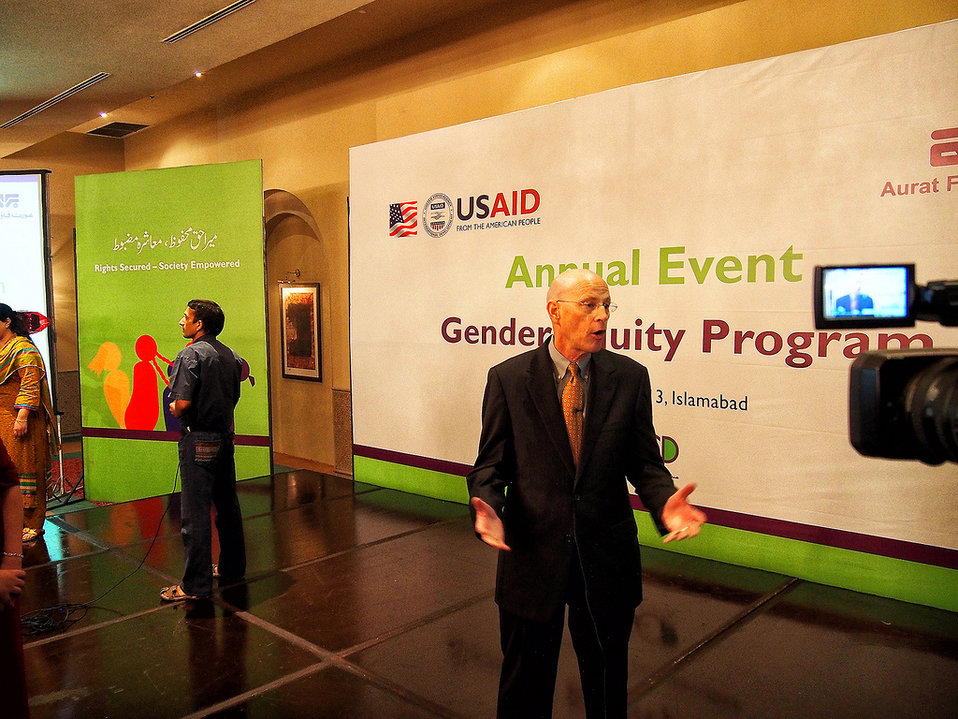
Gender Equity Program, Pakistan

USAID and Aurat Foundation annual event in Islamabad, Sept. 20, 2013